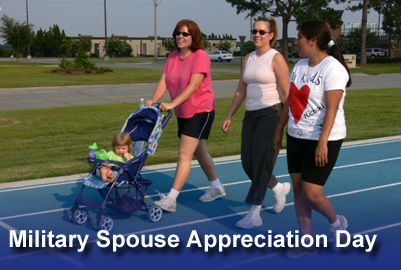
Military Spouse Appreciation Day

President Barack Obama has designated May 7 as Military Spouse Appreciation Day.